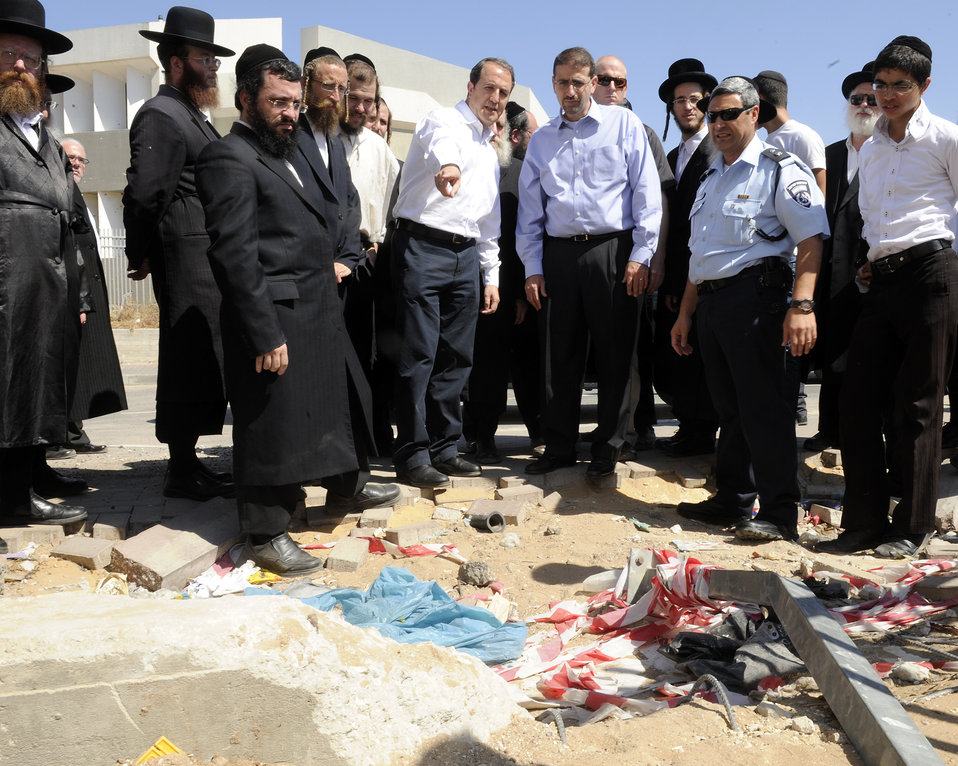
Ambassador Shapiro Tours the Jewish Seminary Where Two Grad Missiles Exploded and Wounded People

U.S. Ambassador to Israel Dan Shapiro tours the Jewish seminary where two Grad missiles, fired from the Gaza Strip, exploded and wounded several people, in Ashdod, Israel, on August 23, 2011. State Department photo/ Public Domain]